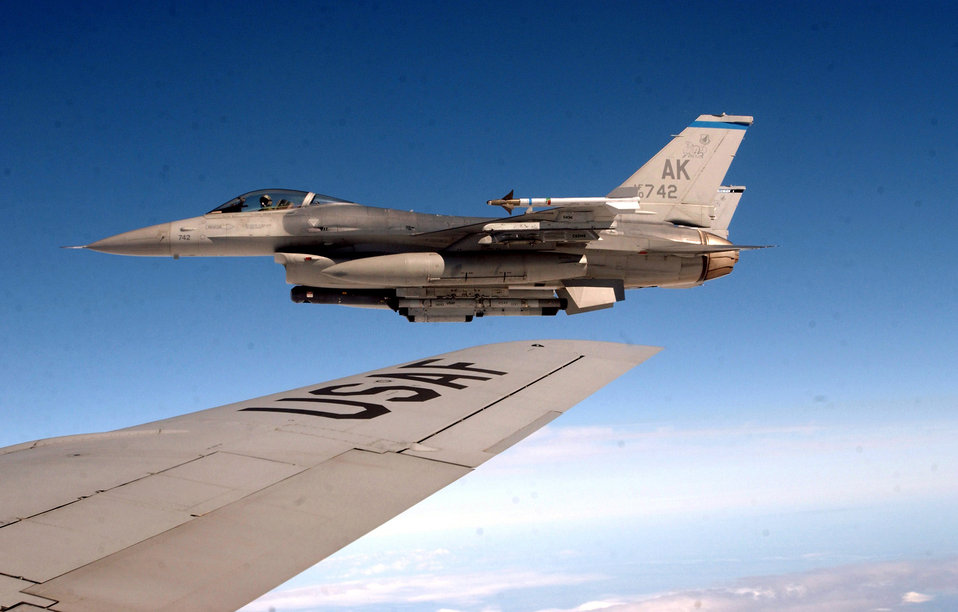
Gas pump in the sky

OVER ALASKA -- An F-16 Fighting Falcon from the 18th Fighter Squadron at Eielson Air Force Base, Alaska, flies in formation with a KC-135 Stratotanker from the Air National Guard's 126th Air Refueling Wing at Scott AFB, Ill., June 11 during Northern Edge '04. The exercise is Alaska Command's joint training exercise designed to enhance interoperability among the services.